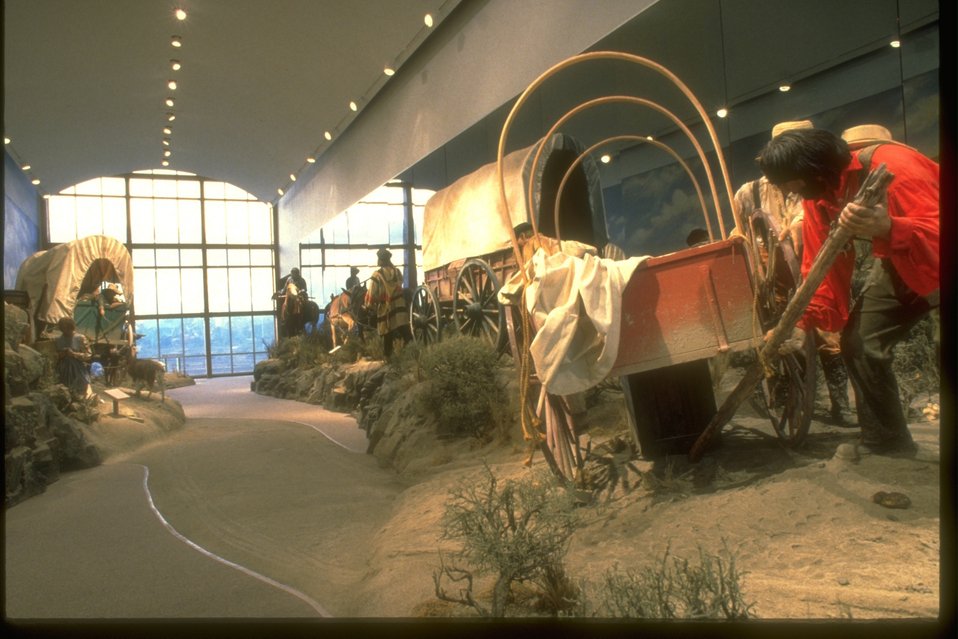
Exhibit at the NHOTIC of a wagon train with one wagon stuck in the sand and settlers use a lever trying to free it.